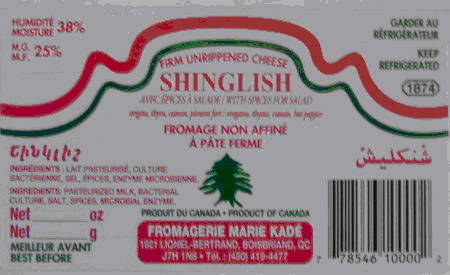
RECALLED - Cheese

December 29, 2011 - Consumer Alert for cheese and milk products due to Listeria monocytogenes contamination.